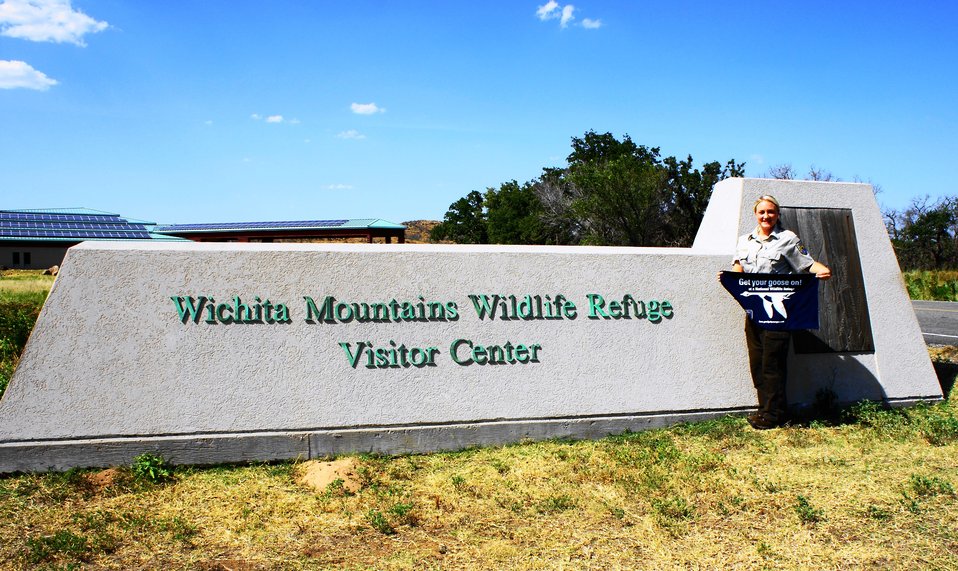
Get Your Goose On!

Wichita Mountains National Wildlife Refuge in Oklahoma.